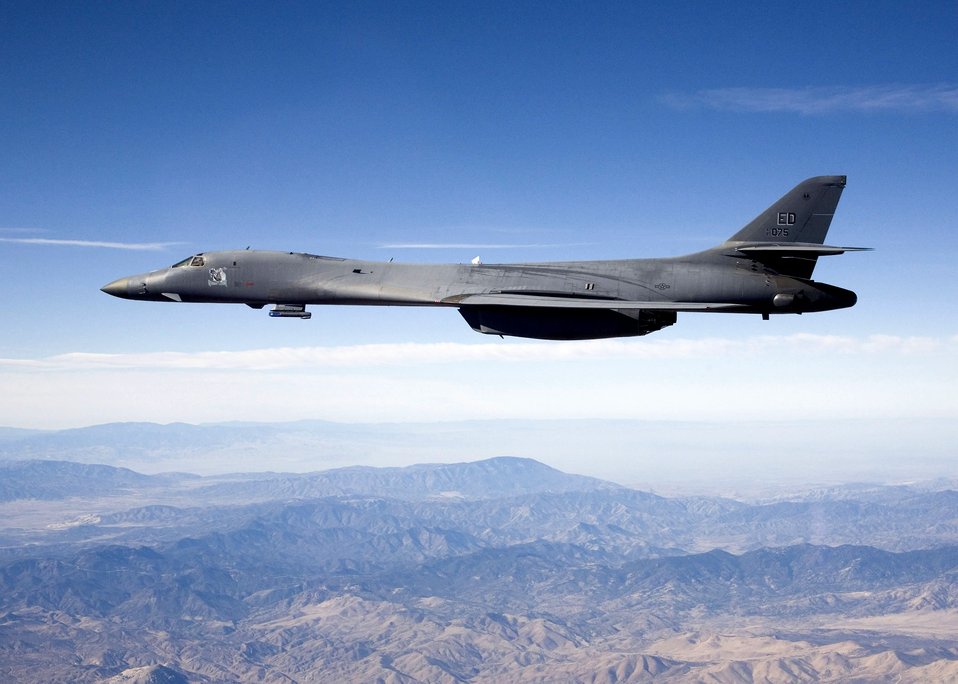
Test squadron demonstrates Sniper pod capability

A B-1B Lancer carries the Sniper pod on its belly as it flies during a flight test Feb. 23 from Edwards Air Force Base, Calif. The 419th Flight Test Squadron testers recently concluded the initial development of the Sniper pod installed on a B-1B. The Sniper pod is an advanced targeting pod with a multi-sensor system that increases the aircraft's self-targeting capability.